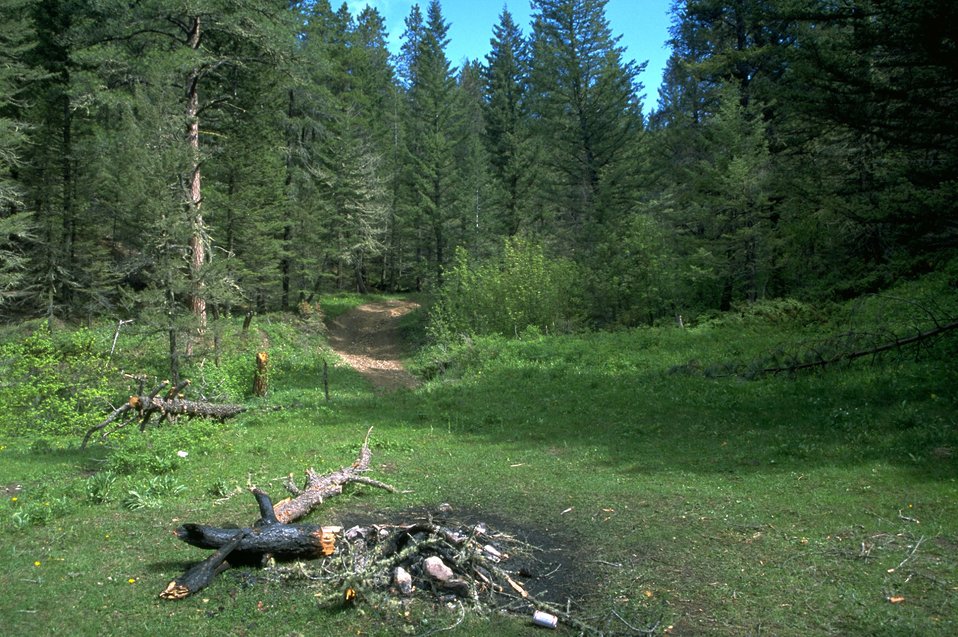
An illegal campfire site among the trees in the Judith Mountains